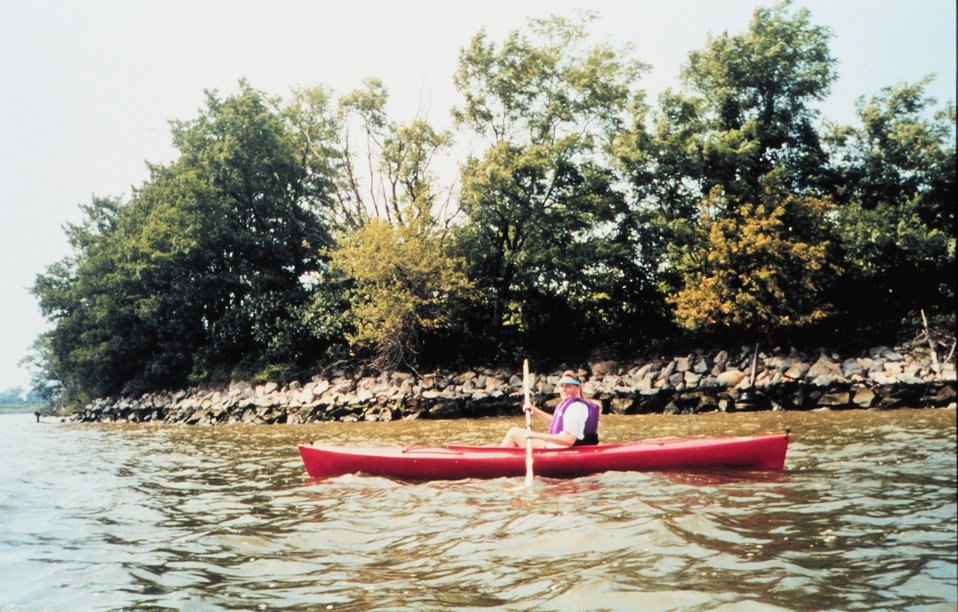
Rock revetment is used along one part of Wye Island to prevent further erosion.